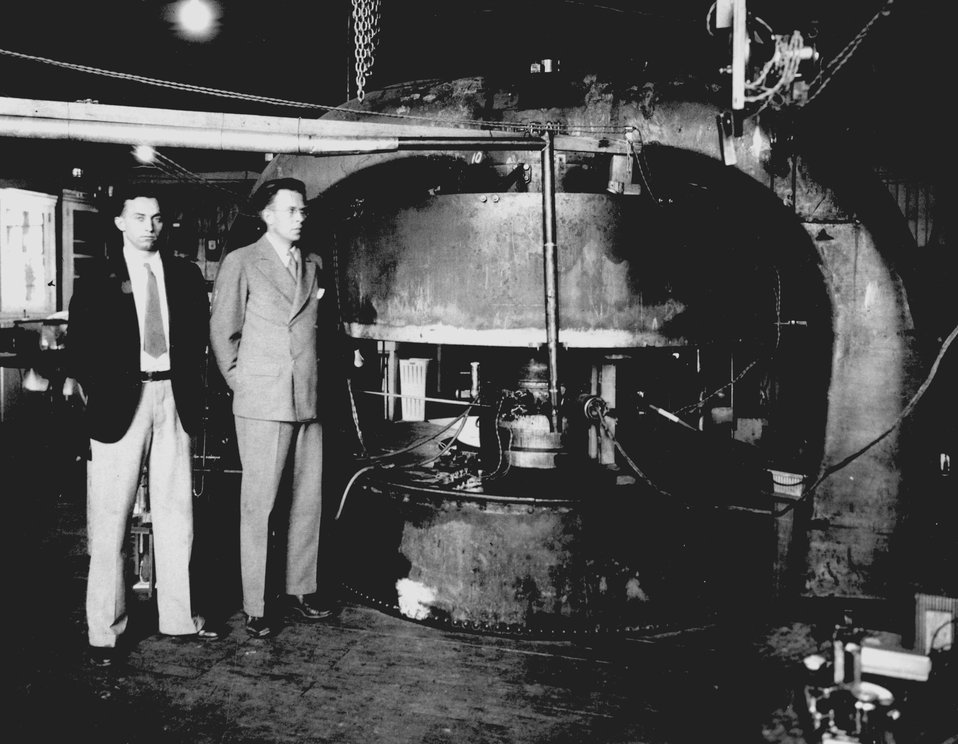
E.O Lawrence and M. Stanley Livingston standing in front of the Cyclotron, 1934, the 'old' Radiation Lab at the U of Cali. Berkeley.